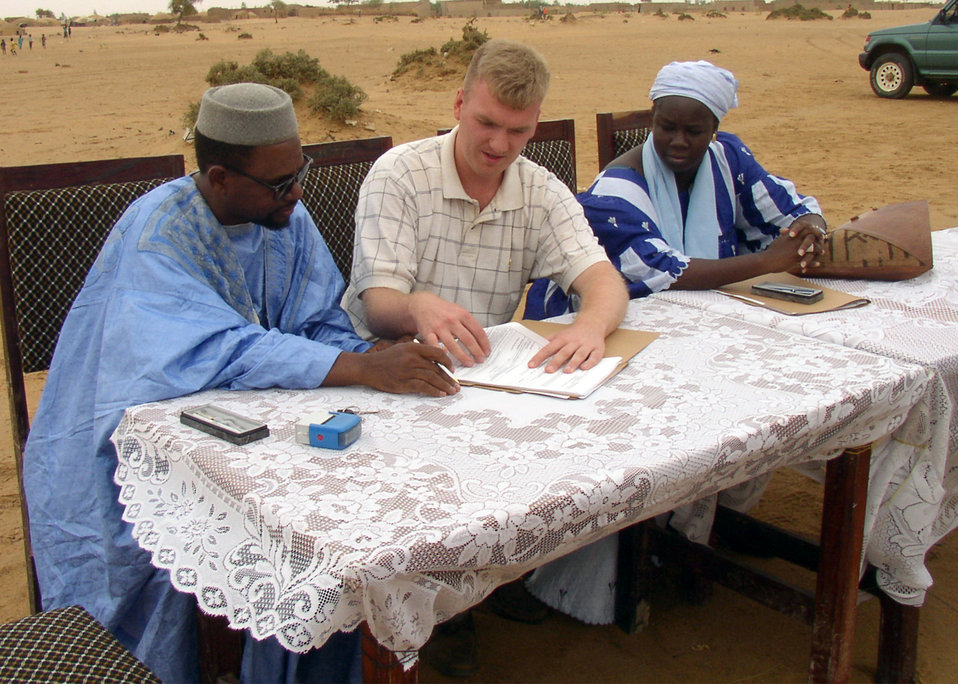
Sign here

GAO, Mali -- Tech. Sgt. Brad Smith finalizes a contract with two Mali representatives. Smith recently traveled here to sign more than $430,000 in contracts earmarked for humanitarian projects. He is a contracting officer assigned to the 39th Contracting Squadron at Incirlik Air Base, Turkey.